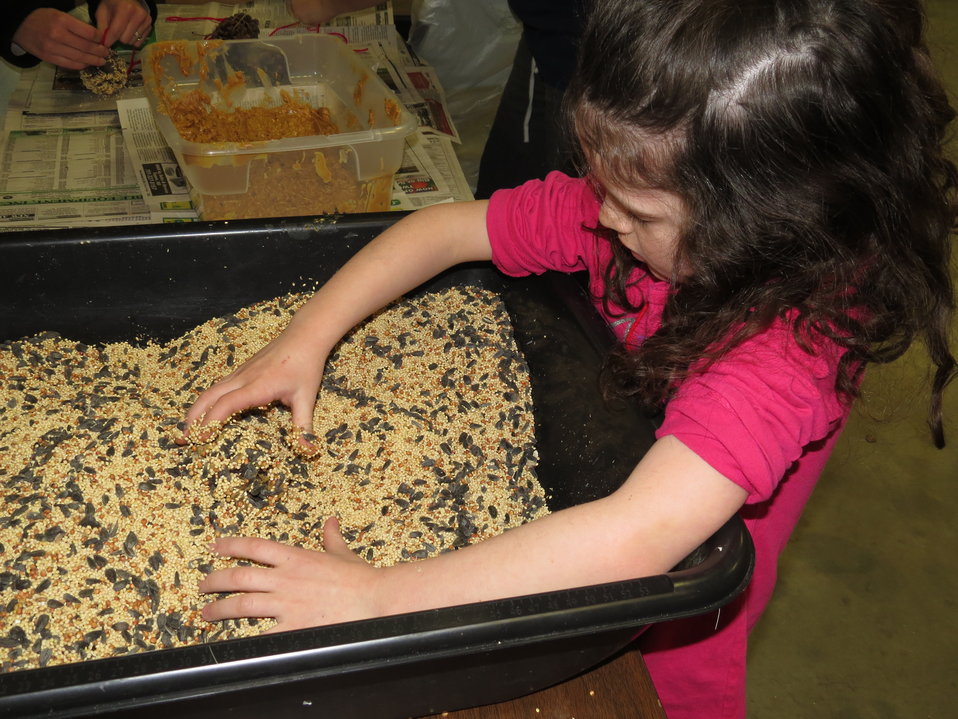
Winterfest 2013

Getting ready to make bird feeders out of pine cones, peanut butter, and bird seed.